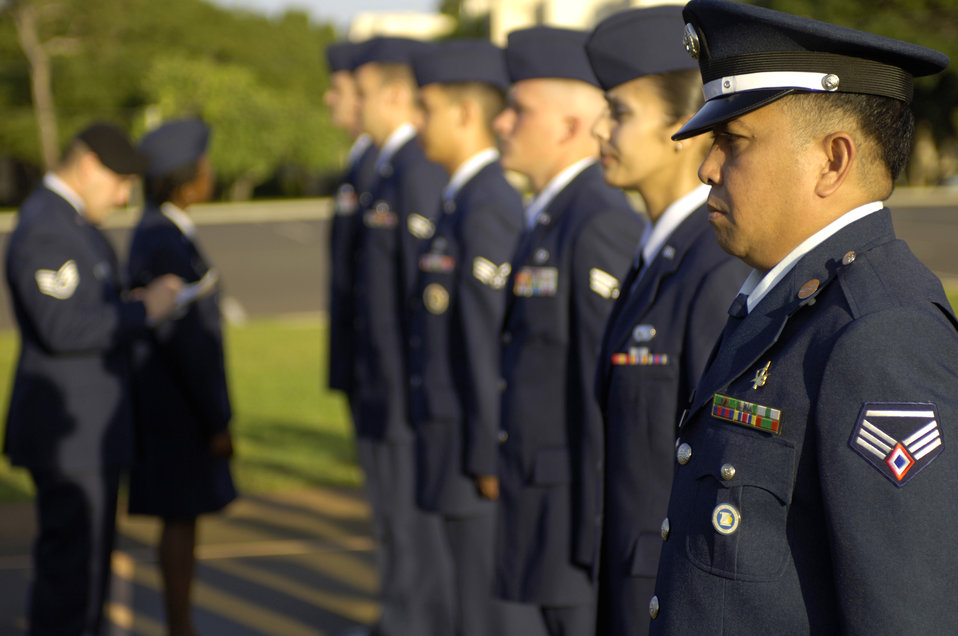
Philippine first

Staff Sgt. Noel Alarcon from the Philippine Air Force stands at attention for an open ranks inspection during Airman Leadership School class Wednesday, March 8, 2006, at Hickam Air Force Base, Hawaii. Sergeant Alarcon and four other Philippine Air Force students are the first Airmen from their service to attend the class. They will take back the lessons learned and develop their own leadership course within their air force.